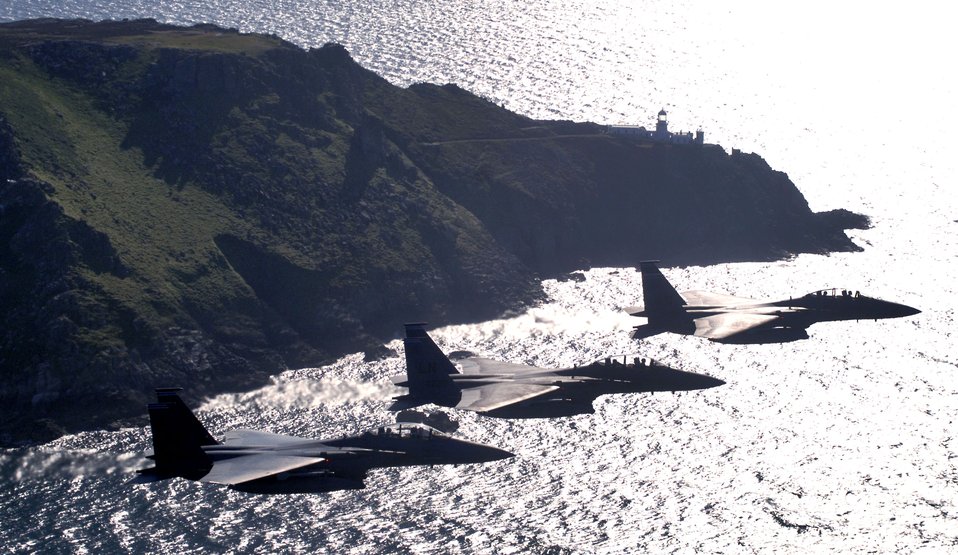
Following a flight of Eagles

Three F-15E Strike Eagles from the 492nd Fighter Squadron at Royal Air Force Lakenheath, England, cruise at 300 mph along the southwestern English coast. The aircrews were on the way to an area off the coast where they could practice basic surface attack techniques.